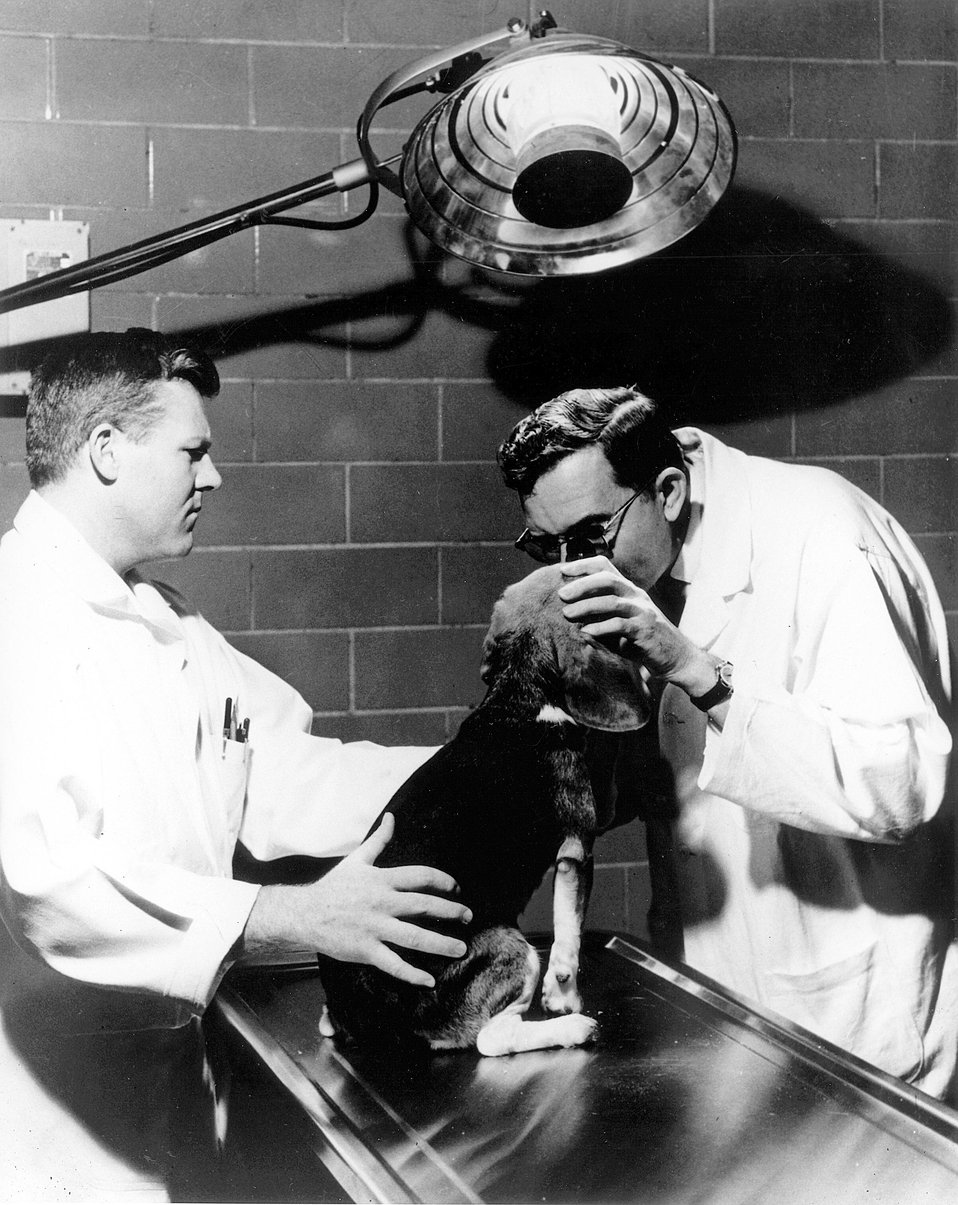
A veterinarian gives a beagle an ophthalmoscopic examination.
c.1965